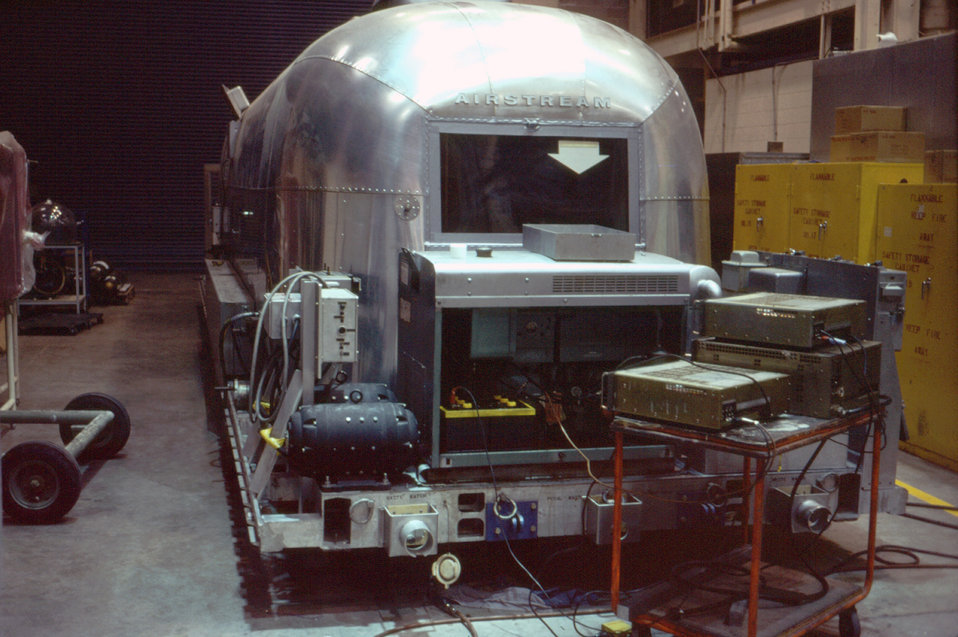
This mobile quarantine facility, or MQF, shown here in a CDC warehouse, was used as an isolation compartment in a Lassa fever case in the 1975, when it transported a patient, Kent Campbell, M.D., M.P.H., from London, to New York City on a C-141 aircraft.